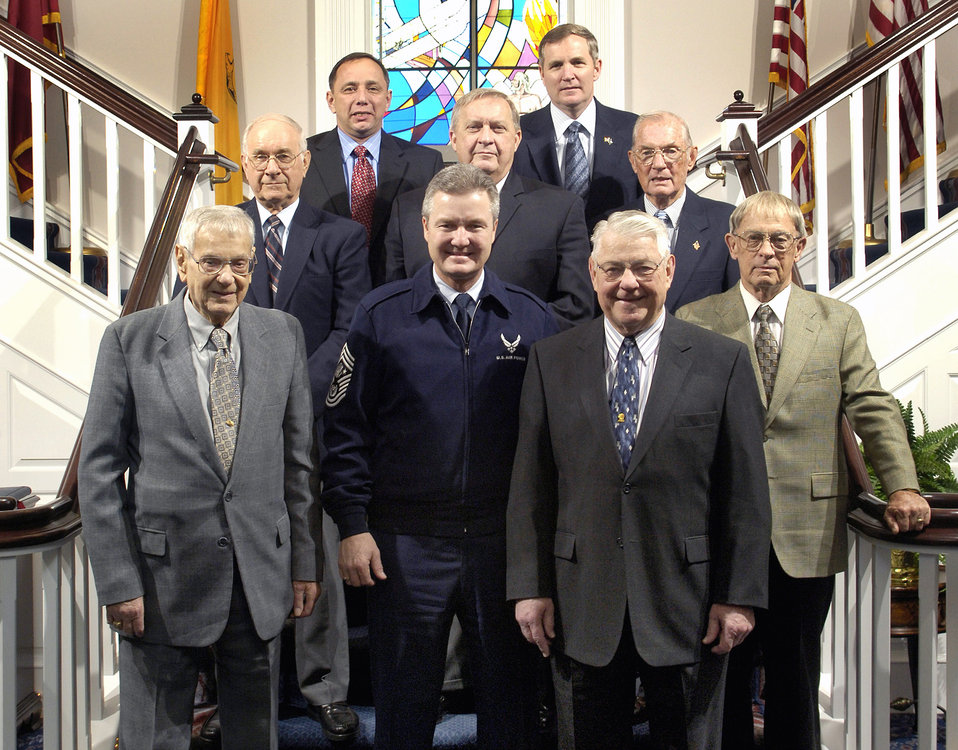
Chief Pfingston loses fight with cancer

Former chief master sergeants of the Air Force gathered Feb. 14, 2006, with then CMSAF Gerald Murray. From left, front row, are Paul Airey, Gerald Murray, Robert Gaylor, Gary Pfingston, Sam Parish, James Binnicker, James McCoy, Frederick Finch and Eric Benken. Chief Pfingston died of cancer June 23 in San Antonio.